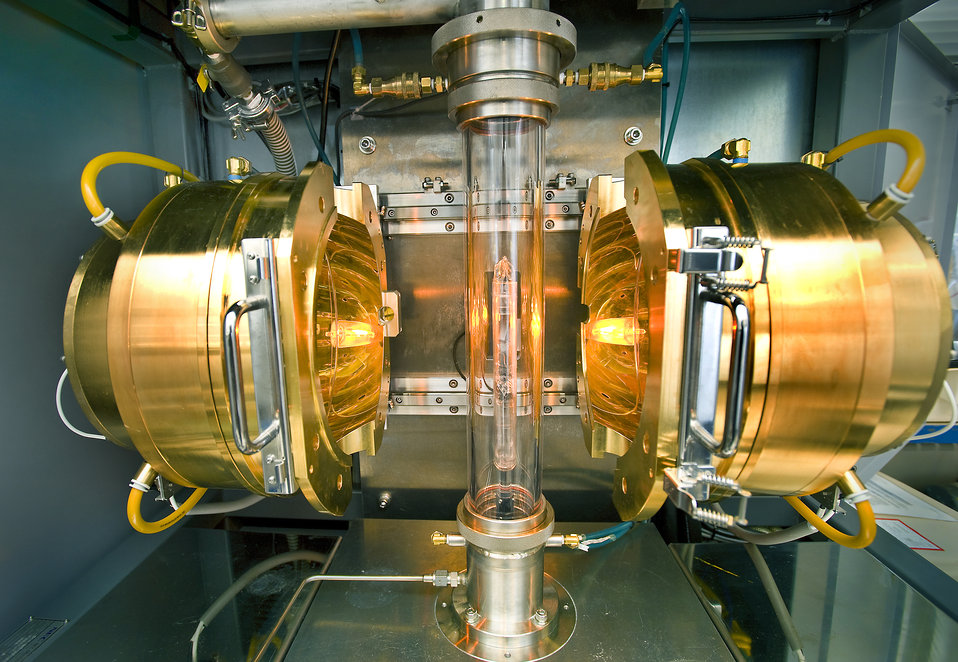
At Brookhaven National Laboratory, the glowing chamber above is used to grow superconducting crystals.
he infrared image furnace focuses infrared light onto a rod, melting it at temperatures of about 4,000 degrees Fahrenheit. Under just the right conditions, that liquefied material recrystallizes as a single uniform structure. The materials grown by those gold-lined instruments typically take a month to form.